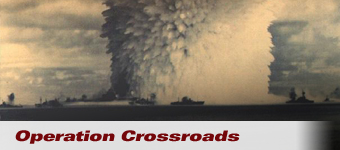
Operation Crossroads

Operations Crossroads history spotlight, photo from the Naval Historical Research Center.